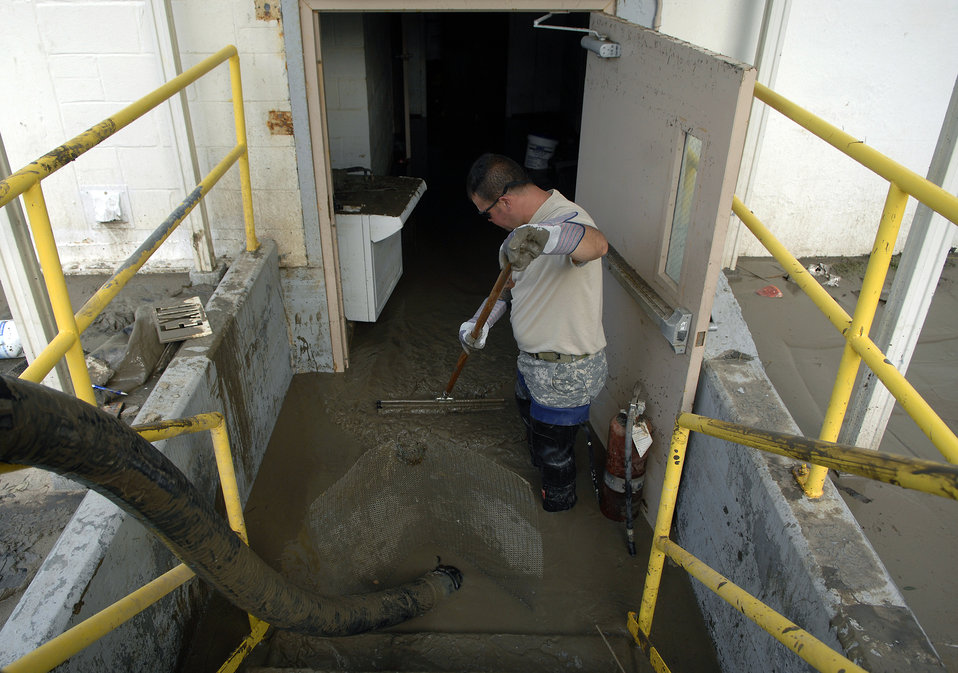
Louisiana Guard clears devastation from Cameron Parish

Army Sgt. Damian Edwards sweeps muddy water from the basement level of the Cameron, La., court house Sept. 15. Nearly 2,000 gallons of water were removed due to flooding caused by Hurricane Ike. Sergeant Edwards is a engineer with the 921st Engineering Company of the Louisiana Army National Guard.